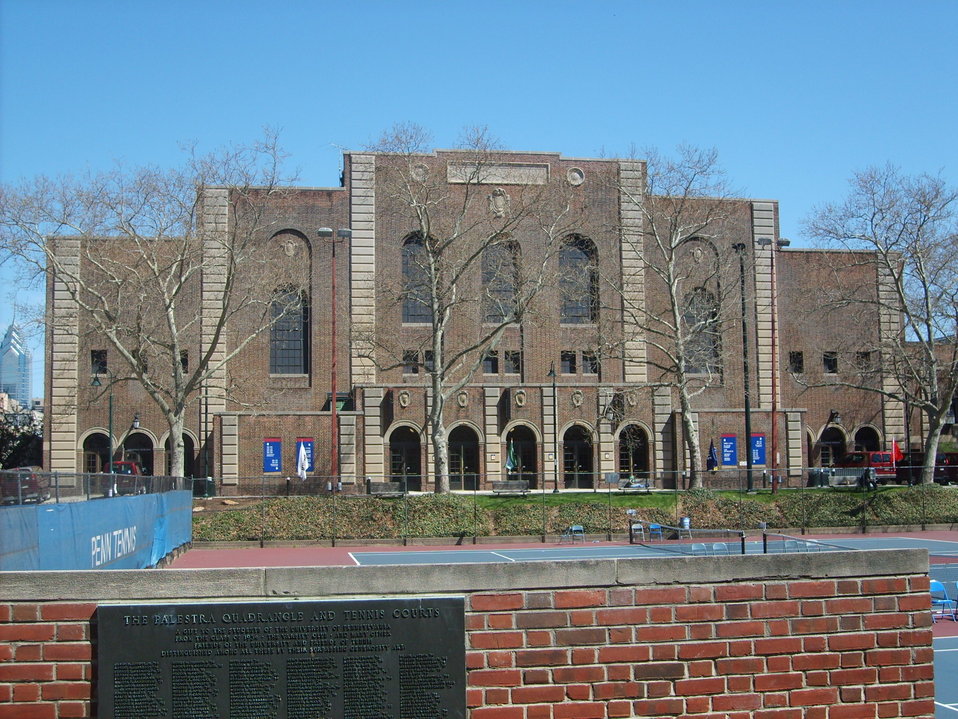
The Palestra